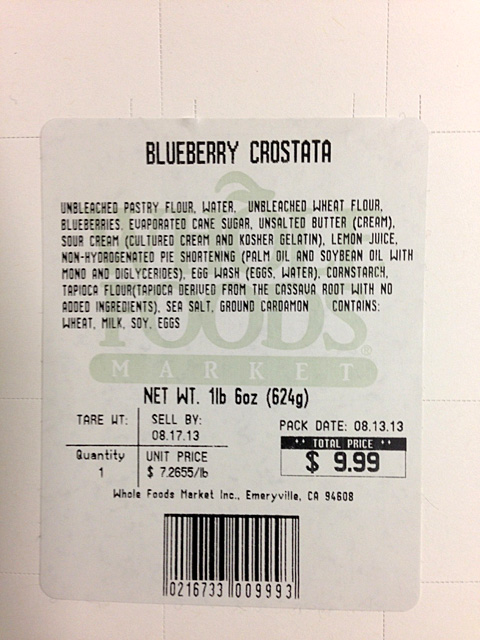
RECALLED – Blueberry Crostata

August 15, 2013 – Product Recall – Whole Foods Market Recalls Sour Cherry and Blueberry Crostatas Due to Undeclared Allergen.